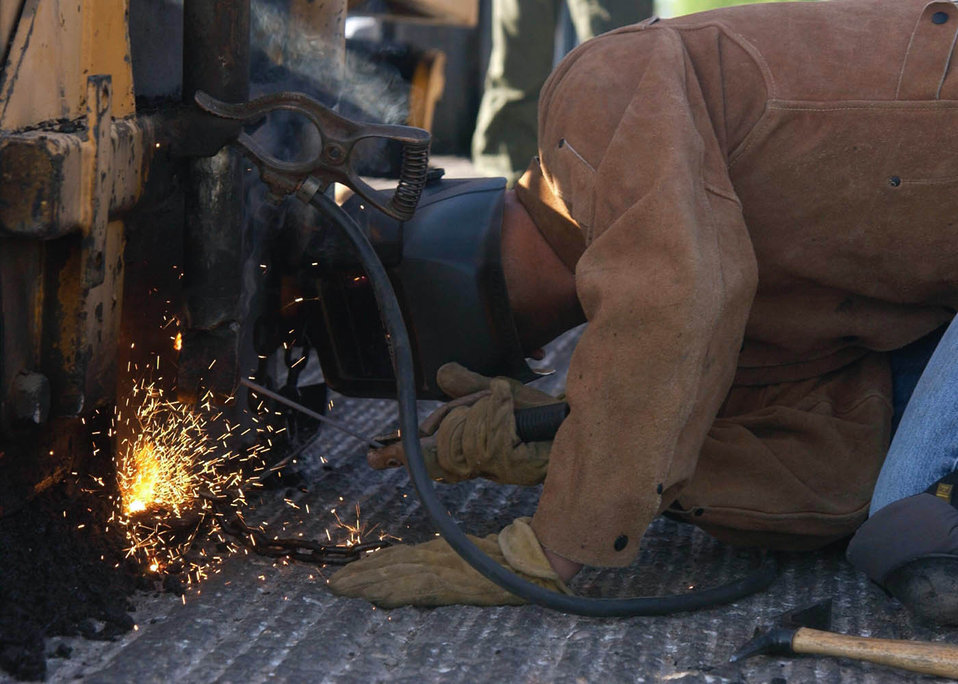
Pavement pounders

DAVIS-MONTHAN AIR FORCE BASE, Ariz. -- Sam Alvarado welds together a broken chain attachment for a paving screed May 6. Engineers with the 355th Civil Engineer Squadron used an asphalt lay-down machine to pave the new entrance to a gate here. Mr. Alvarado is a contractor with the squadron.